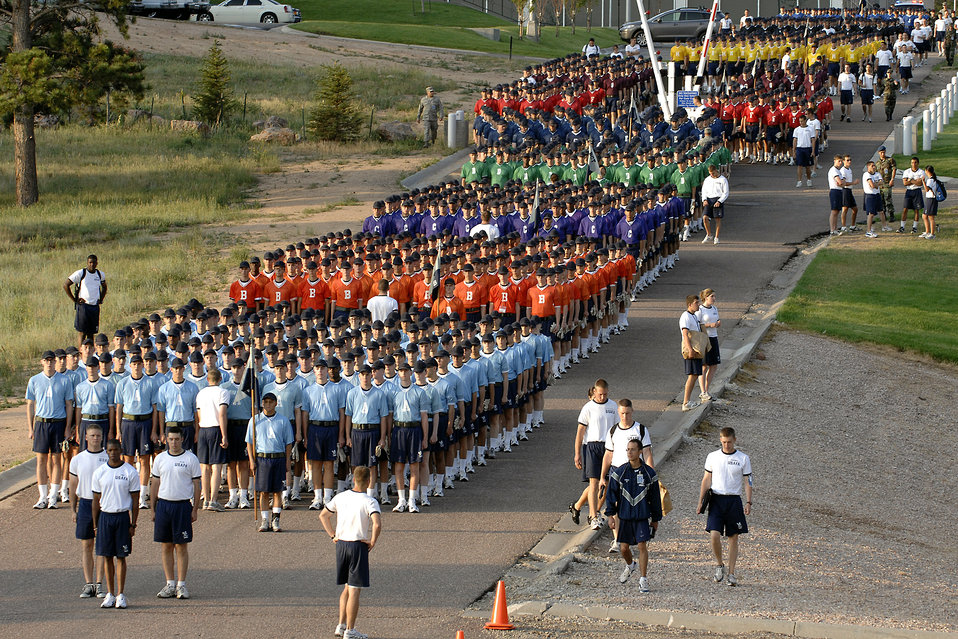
Academy basic cadets team up for Field Day

U.S. Air Force Academy basic cadet trainees of the Class of 2012 march to the athletic fields July 12 at the Academy in Colorado Springs, Colo., to test their teamwork and athletic skills during Field Day. After being greeted by Academy leaders, they competed in various athletic events, and closed out the morning with a parachute demonstration by the Academy's Wings of Blue parachute demonstration and competition team.